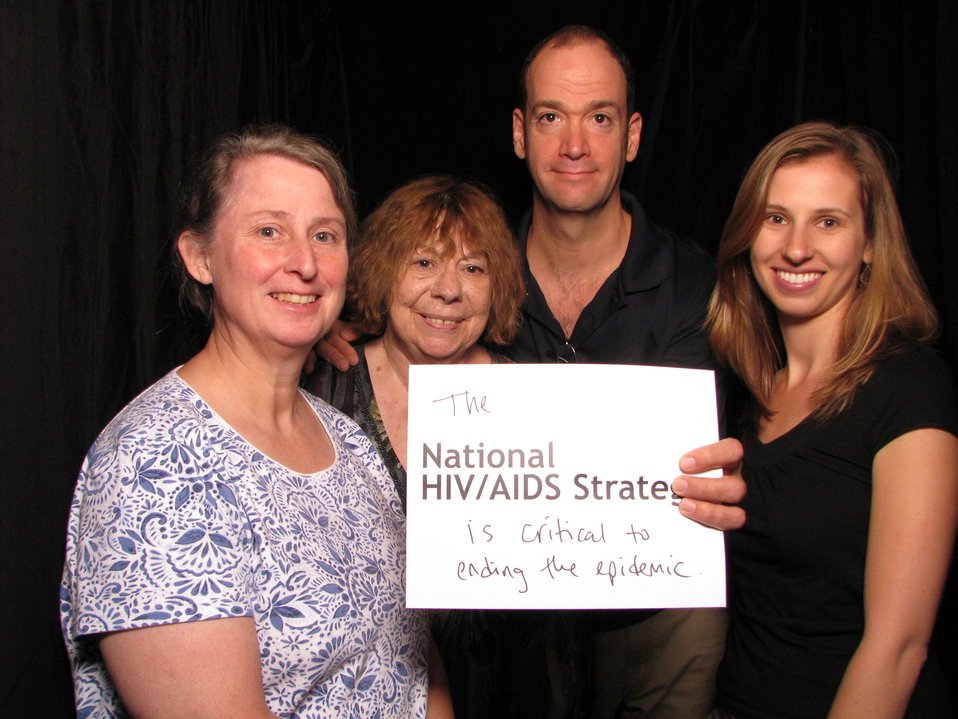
The National HIV/AIDS Strategy is critical to ending the epidemic

From the AIDS.gov photo booth at the U.S. Conference on AIDS, September 2010 (Orlando, FL).